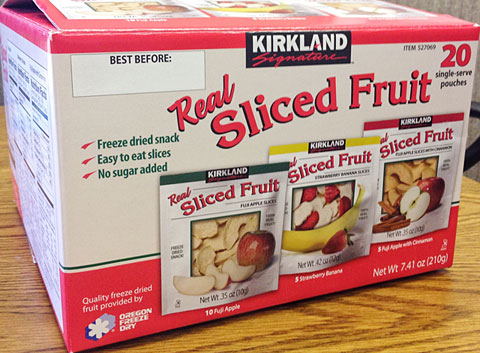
RECALLED – Sliced Fruit

March 13, 2014 – Product Recall – Oregon Freeze Dry, Inc. of Albany, OR has voluntarily recalled 59,780 cases of Kirkland Signature Real Sliced Fruit, produced exclusively for Costco Wholesale Stores. In cooperation with Costco, the company issued the recall after determining the product has the potential to be contaminated with Salmonella.